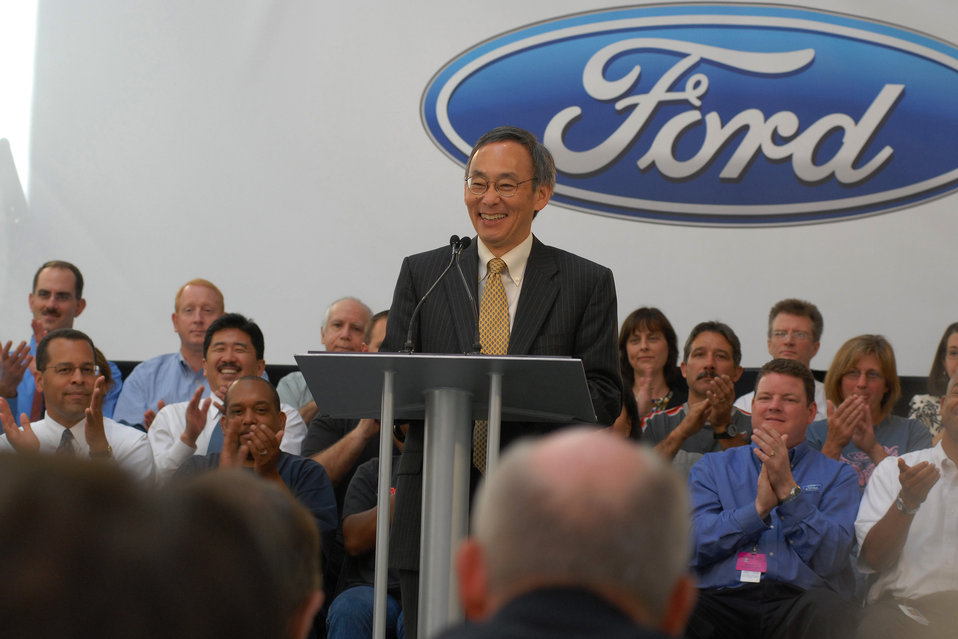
Dearborn Mi., 6-23-09. Today, U.S. Department of Energy Secretary Steven Chu announced that Ford has been approved for the Advanced Technology Vehicles Manufacturing Incentive Program. The loan commitment announced is $5.9 billion. Shown here is U.S. Department of Energy Secretary, Steven Chu speaking to Media.